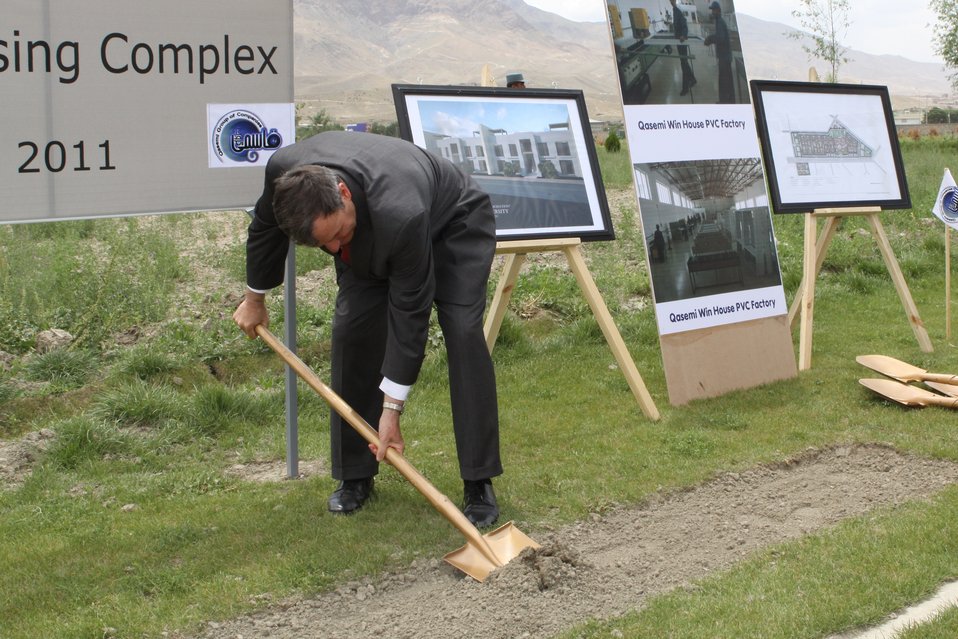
100526 AUAF Graduation 402